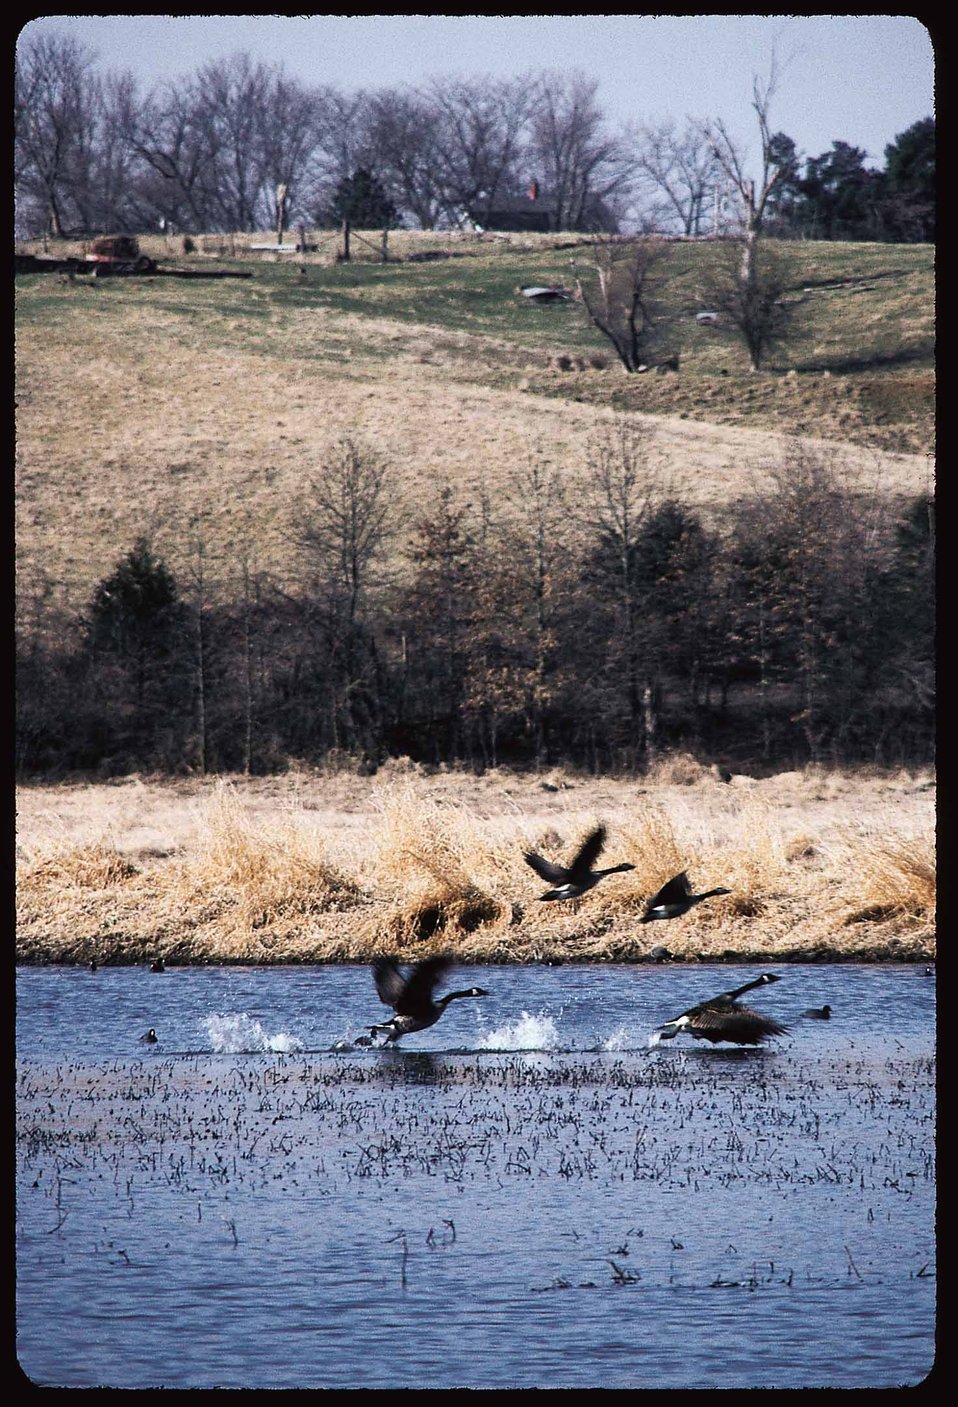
Habitat for ducks and geese on a restored wetland in Van Buren County, Iowa.